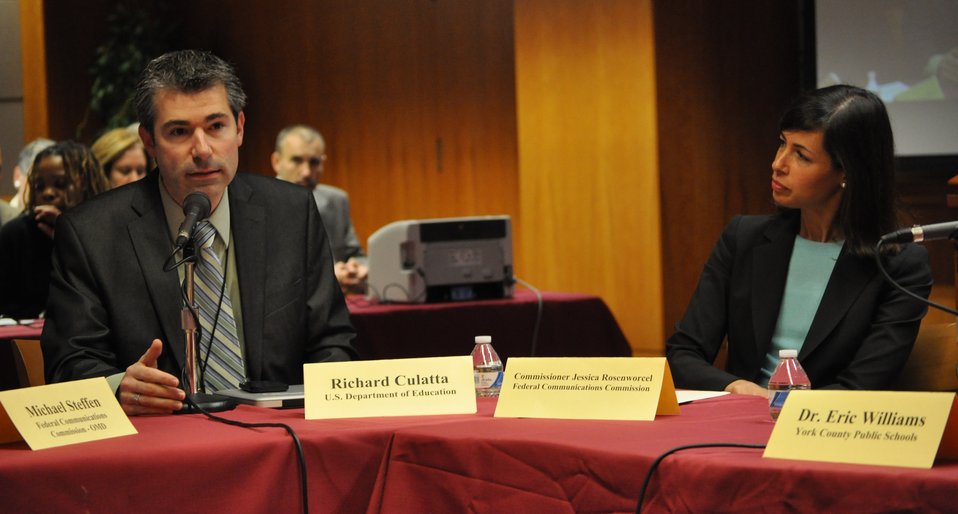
5.6.2014 E-Rate Modernization Workshop

Richard Culatta, Director, Office of Educational Technology, U.S. Department of Education and Commissioner Jessica Rosenworcel